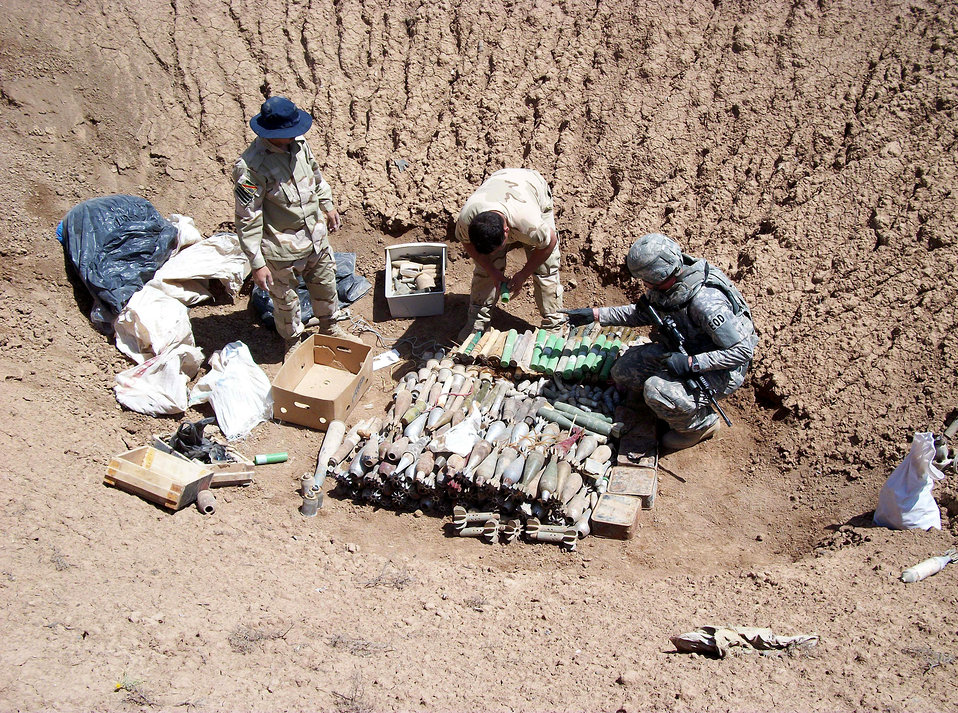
Iraqi air force EOD training

Iraqi airmen pass down munitions and unexploded ordnances for a detonation April 28, 2011, Contingency Operating Site Warrior in Iraq.